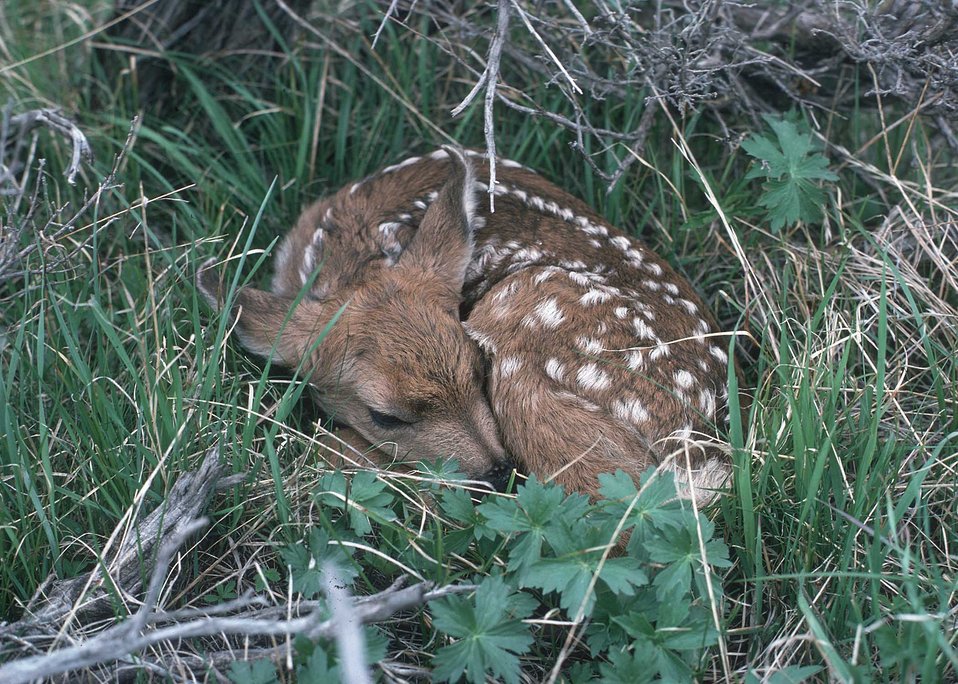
A baby deer.